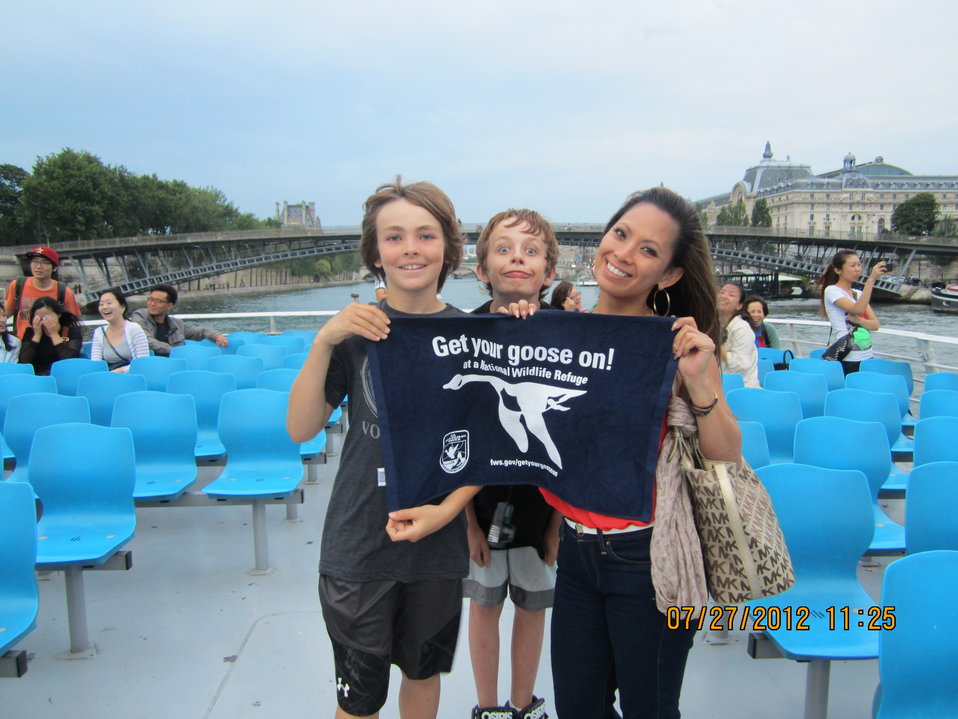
Get Your Goose On! in France